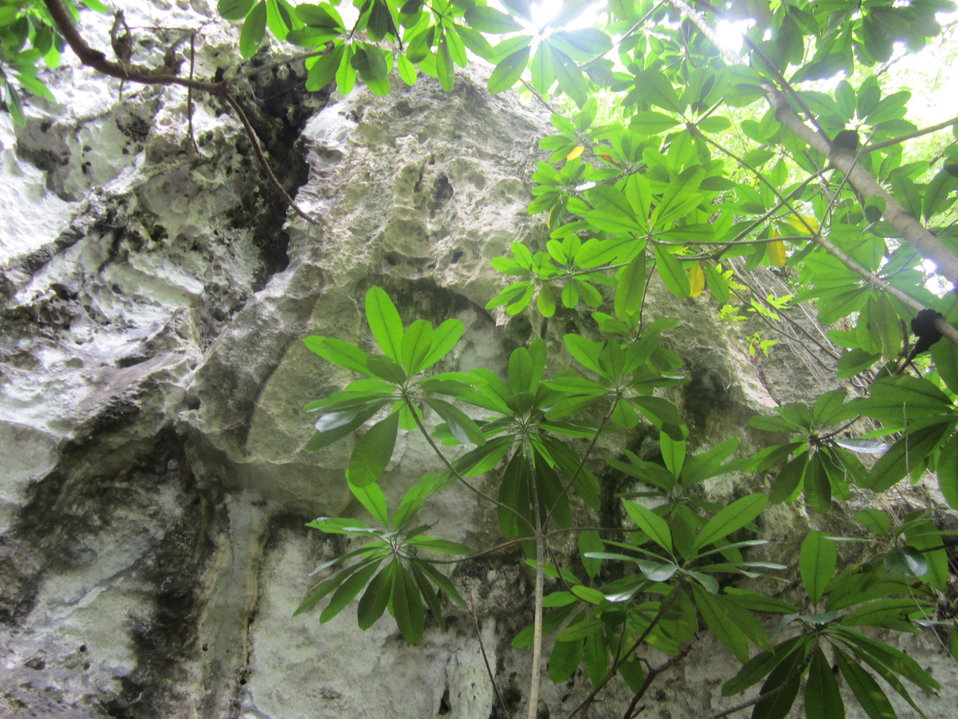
Camp Shutterbug 2011 prize winner

Guam National Wildlife Refuge, Pacific Islands
Photo: Ashley Patricio, age 12
First place, Scenery
The Fago nut tree, or Pacific almond, is a favorite food of the threatened Mariana fruit bat. This one was photographed near the refuge's Grotto Cave.